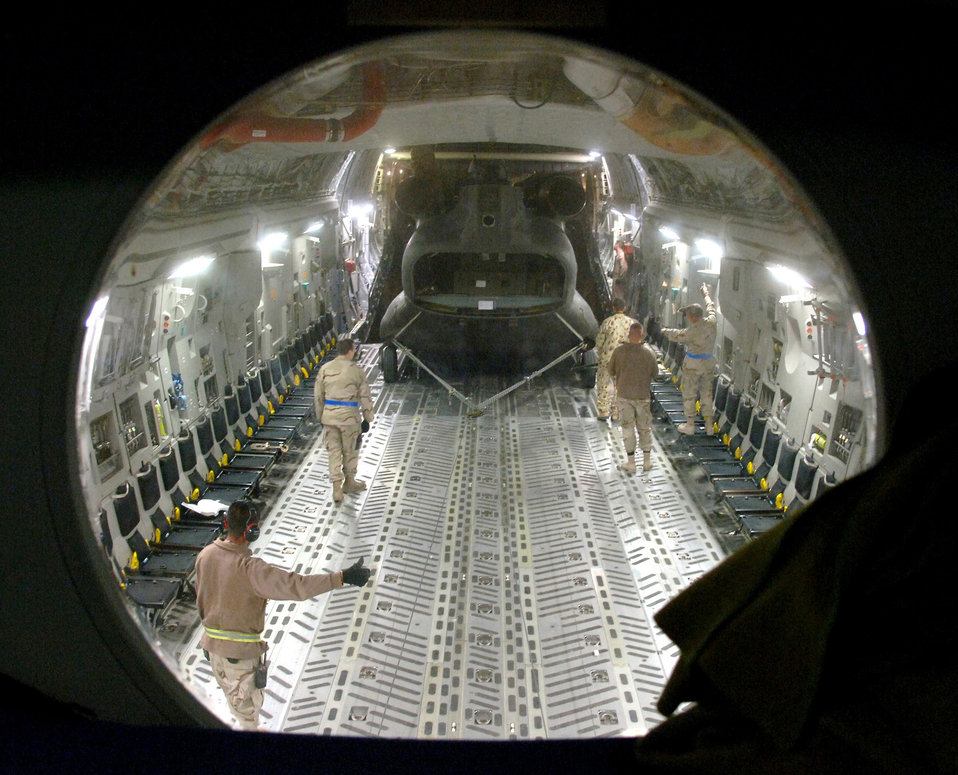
C-17 cargo load

Crewmembers from the 817th Expeditionary Airlift Squadron and their Australian forces counterparts upload an Australian Army CH-47 helicopter onto a C-17 Globemaster III at a deployed location in Southwest Asia on Sunday, Mar. 12, 2006. The C-17 is from McChord Air Force Base, Wash.